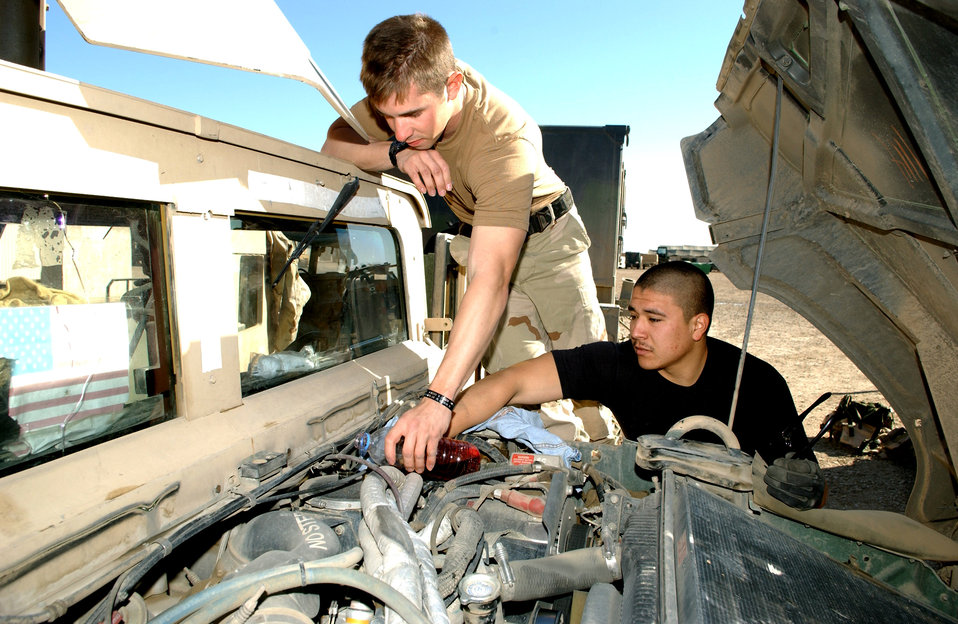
Patrolling Baghdad

Airmen from Detachment 7, 732nd Expeditionary Security Forces Squadron conduct quality assurance and quality control checks on a high mobility, multi-wheeled vehicle, Nov. 10 in Baghdad, Iraq.